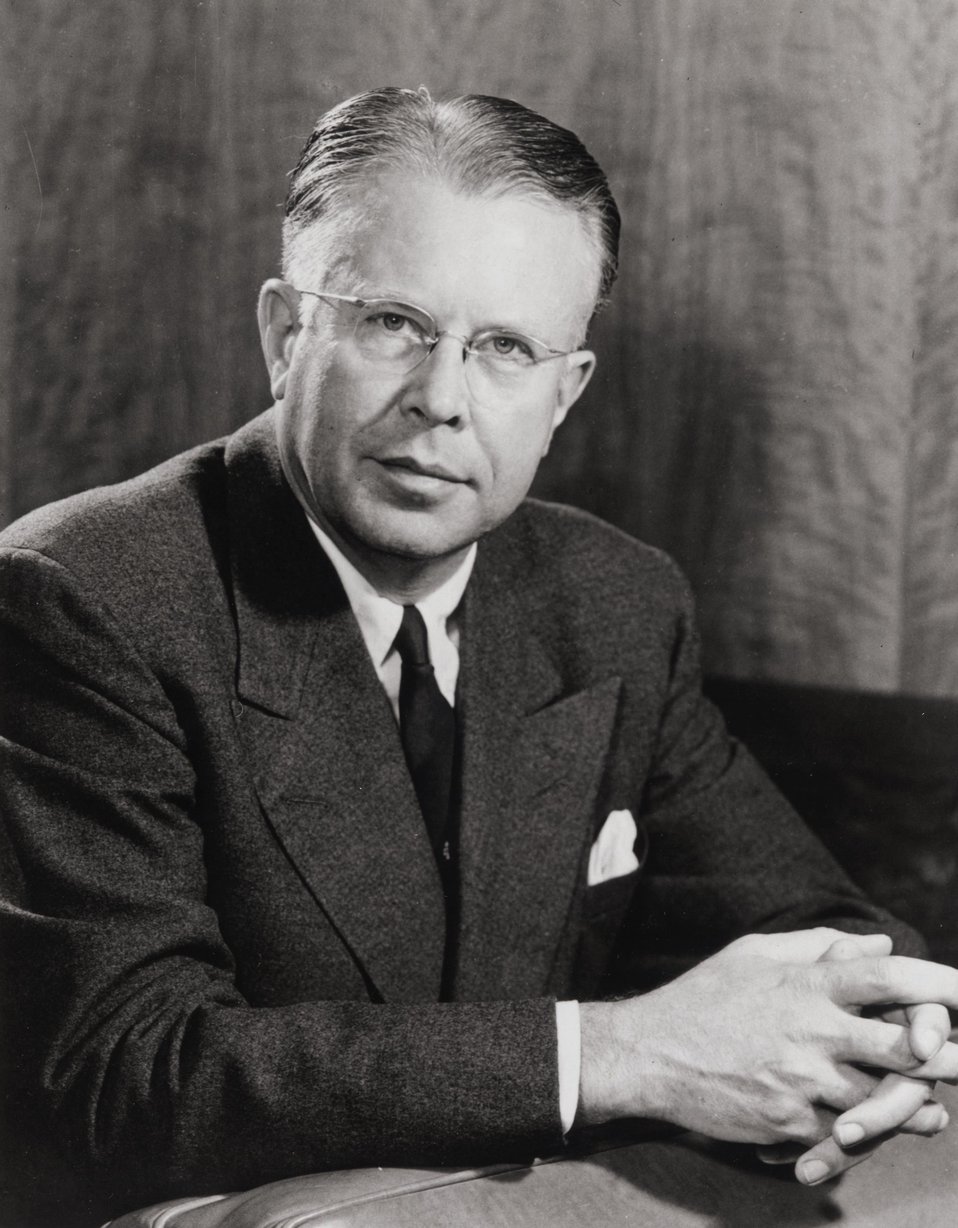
E.O. Lawrence